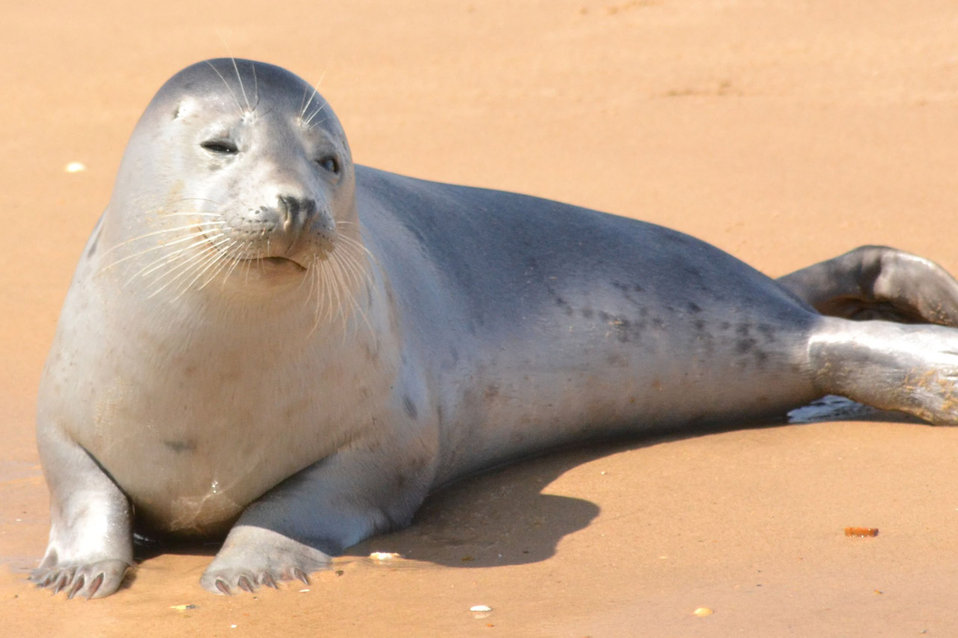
Seal of approval

Seal on blakeney point.